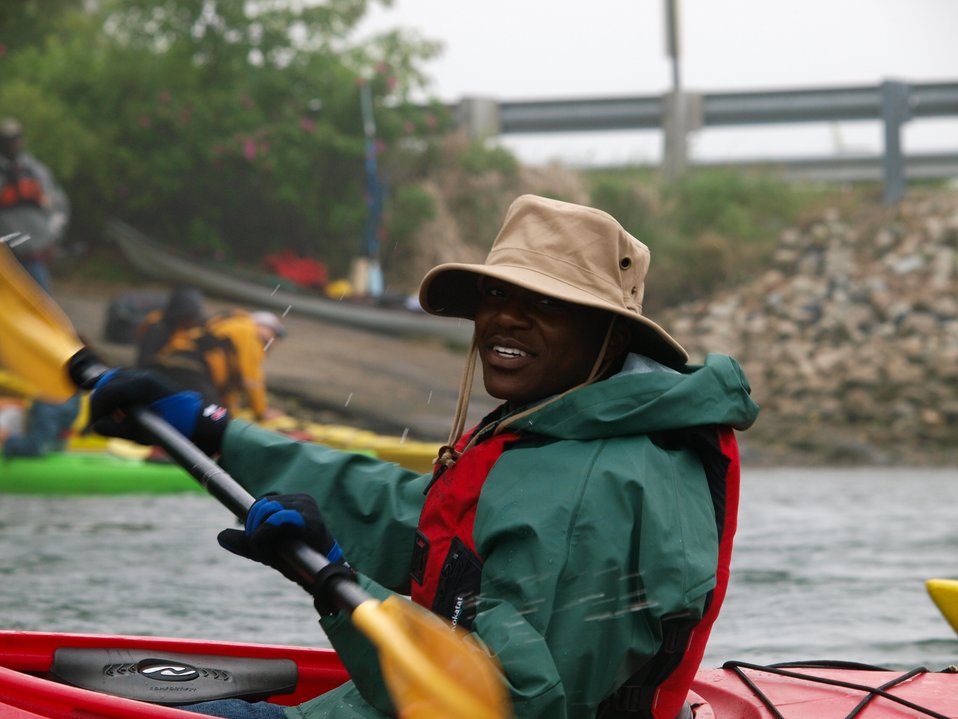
Chris Dupree- 2010 Annual CIP Kayaking trip

CIP Intern Chris Dupree on the program’s annual coastal kayaking trip.